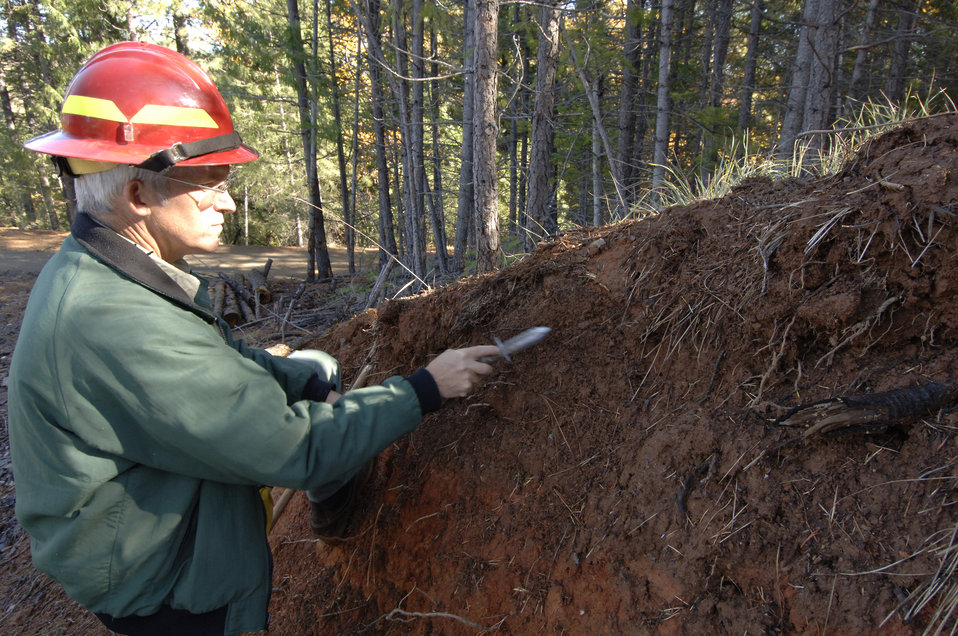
U.S. Forest Service soil scientist Brad Rust conducts evaluations for surface soil texture and soil compaction for the Shasta-Trinity National Forest in California on November 17, 2007. The Forest Service considers the sustainable production of natural resources and the maintenance of soil and water quality high priorities as it plans and implements management activities. Forest Service regions developed soil quality standards and implemented direction or guidance relating to maintenance and protection of soil productivity.